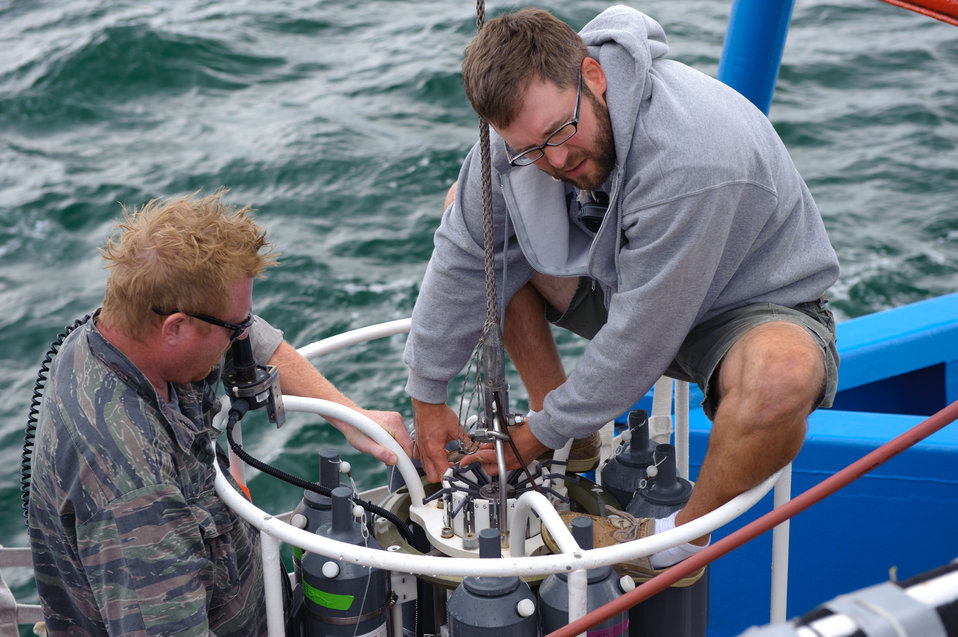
August 9, 2011 Crew technicians work away on the CTD

In this photo: Matt Lowe (left) Nate Webb (on top of the rosette)

There are three technicians on board the Bold. Their primary responsbilities are equipment and lab maintenance, and they also assist the scientists that come on the ship when the survey's are underway to ensure the equipment is functioning properly.